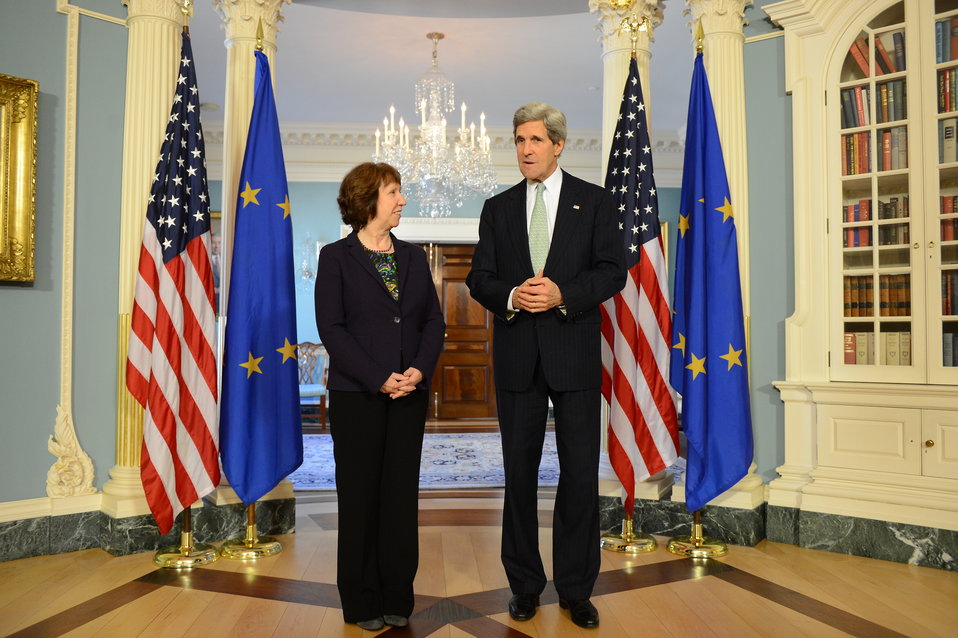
Secretary Kerry Meets With EU High Representative Ashton

U.S. Secretary of State John Kerry meets with European Union High Representative Catherine Ashton at the U.S. Department of State in Washington, D.C., February 14, 2013.